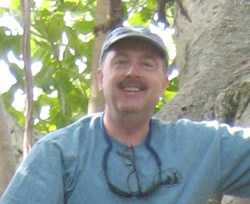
USFWS biologist John Schmerfeld during a trip to Belize.